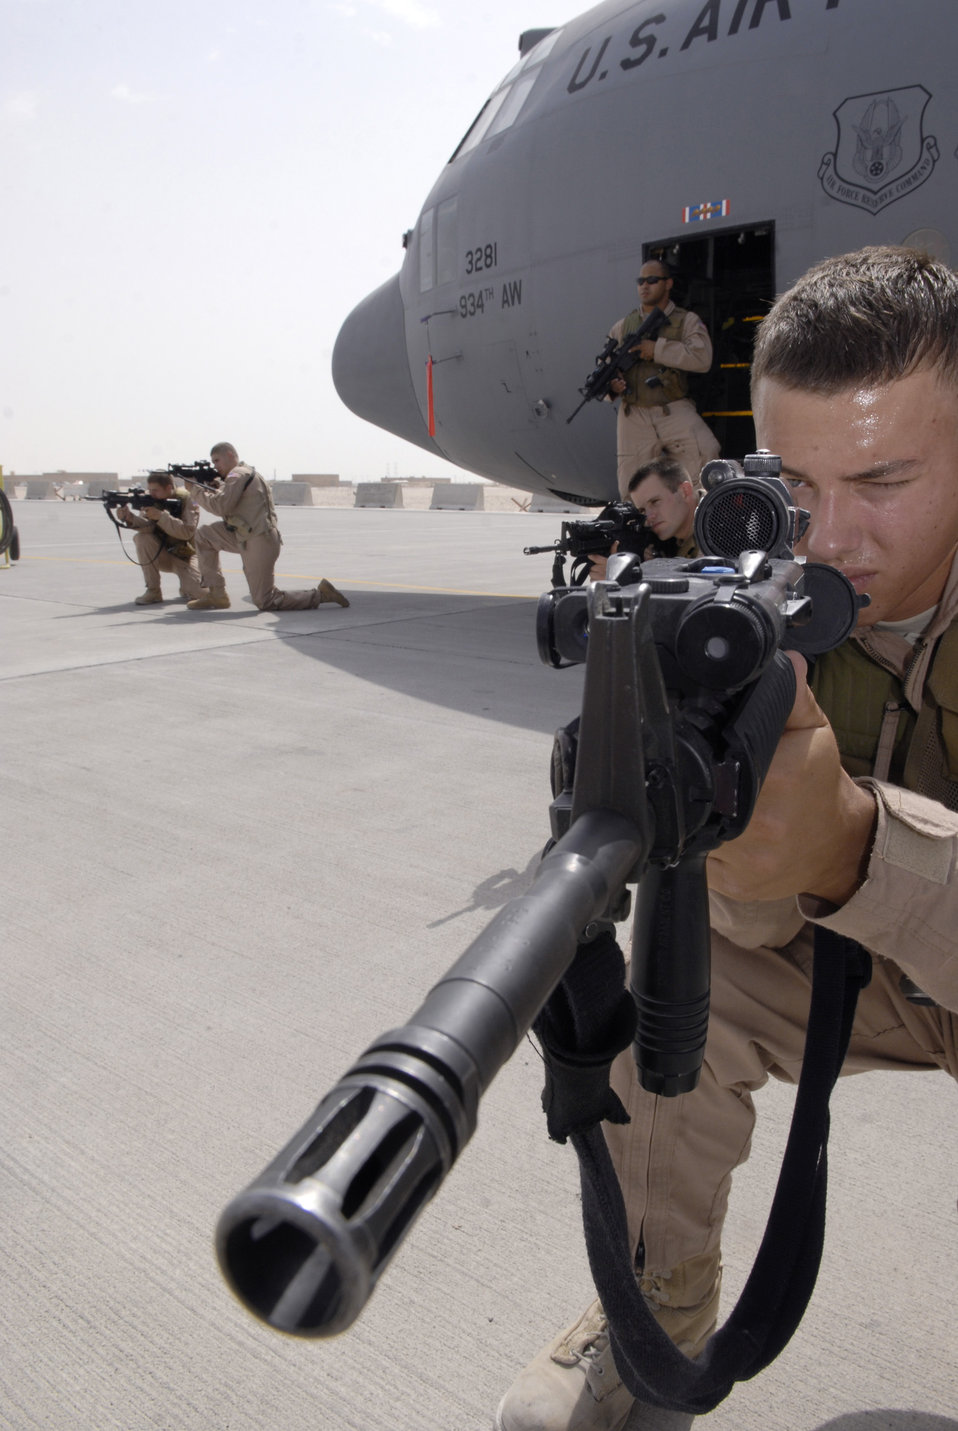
Elite team provides security for airlift assets in unsecure locations

Airman 1st Class Avery Ward and other team members provide security for a C-130 Hercules during a training exercise June 18 at an air base in Southwest Asia. Airman Ward is a 379th Expeditionary Security Forces Squadron fly-away security team member. He is a native of Lake Charles, La., and is deployed from Eielson Air Force Base, Alaska.